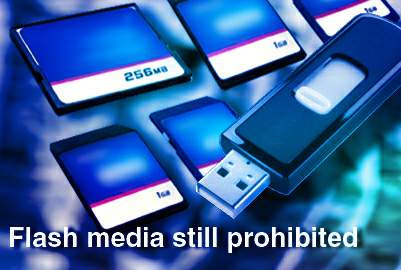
Thumb drives/flash media still prohibited on Air Force network

The ban on flash media use in the Air Force is still in place. Consistent with this order, Air Force officials decided to continue its servicewide ban on flash media devices until Air Force specific guidelines and procedures are determined.